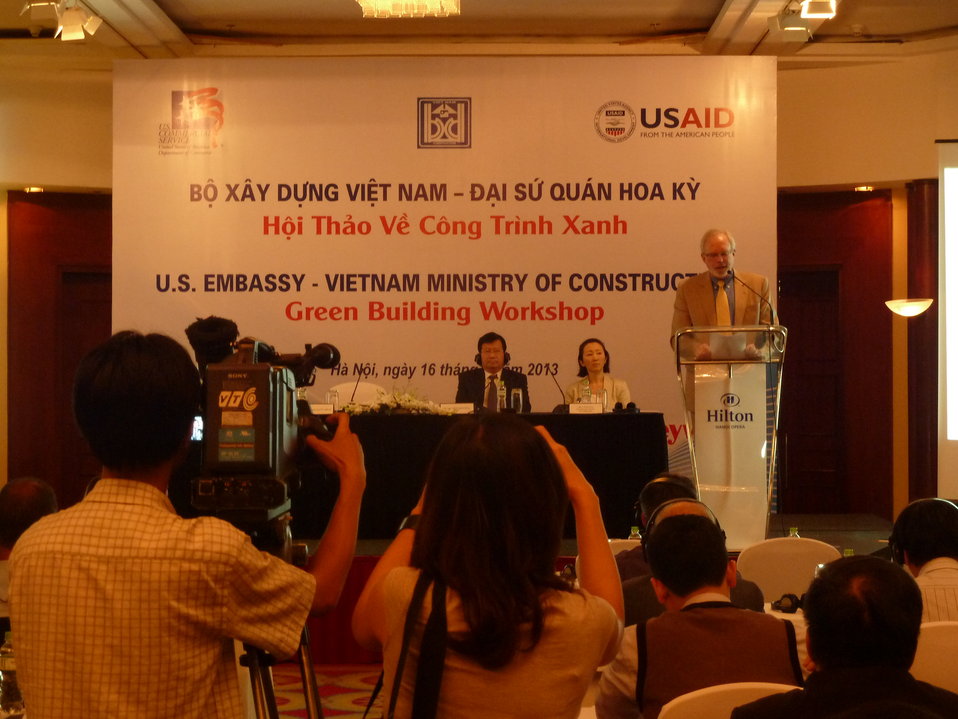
U.S. Ambassador David Shear Speaks at Green Building and Energy Workshop

Hanoi, Vietnam
April 16, 2013